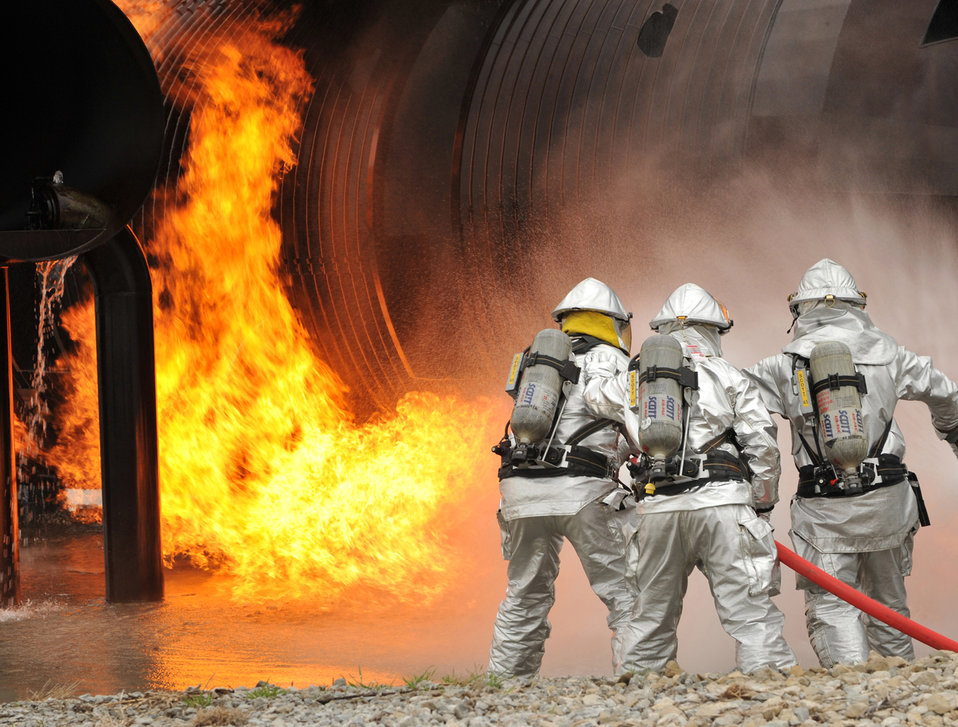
Taming the beast

Firefighters attack the flames of a simulated aircraft fire during a joint training exercise May 4 at Offutt Air Force Base, Neb. Firefighters from active-duty, Air Guard and Reserve units participated in the joint training exercise for disaster preparation.